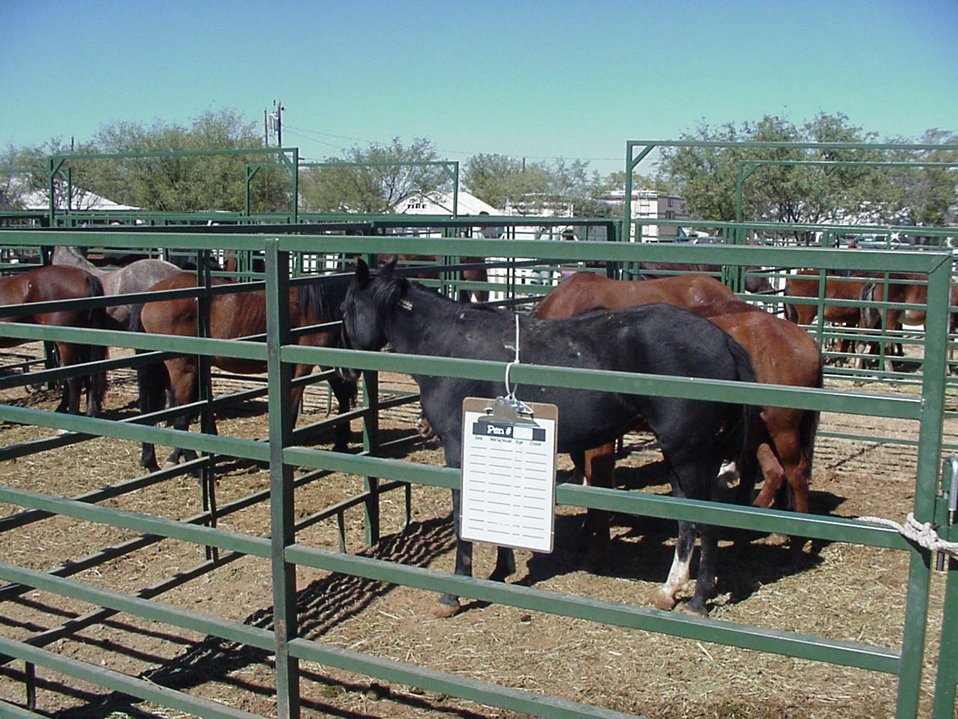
Horses waiting to be adopted at Camp Verde.